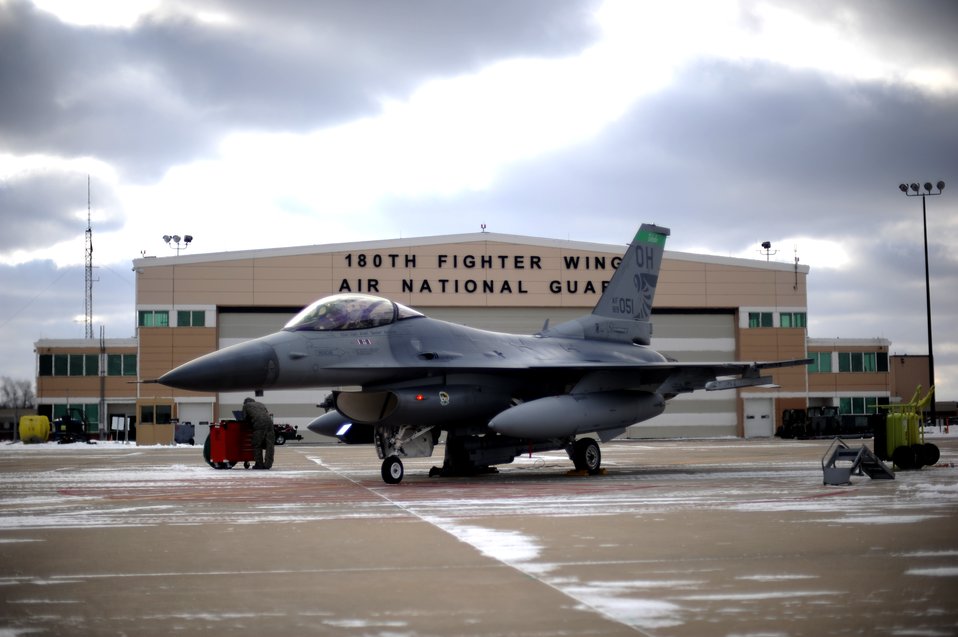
Ohio Air National Guard Base fuels test

An F-16 Falcon from the 180th Fighter Wing undergoes preflight checks before taxing down the runway Feb. 12, 2012, at Ohio Air National Guard Base. The jet is operation on a 50/50 blend of conventional and biofuel as part of a field service evaluation.